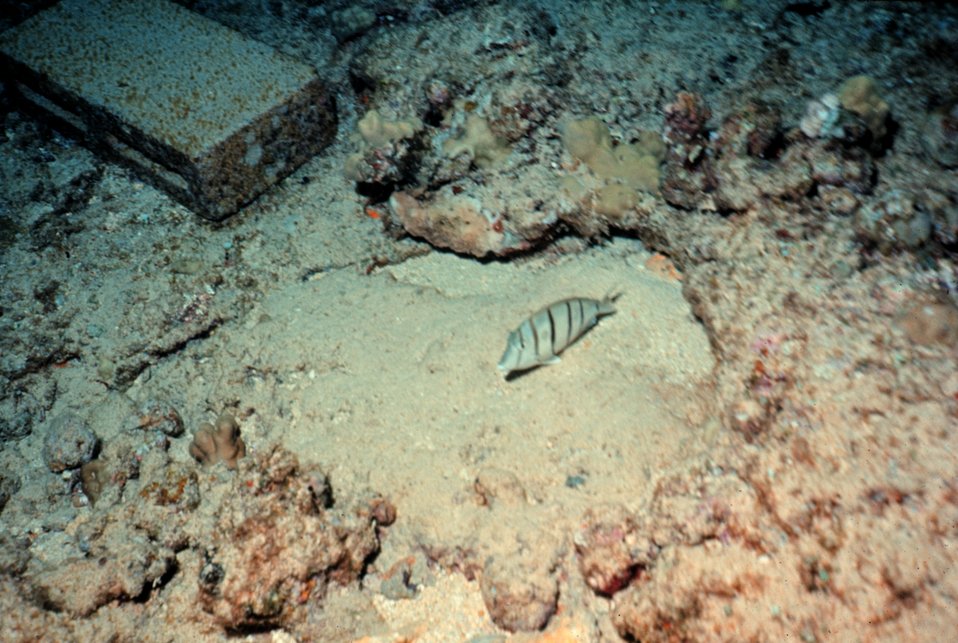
Night dive discovers manini sleeping. Surgeonfish -Acanthurus sandvicensis (manini or convict tang)